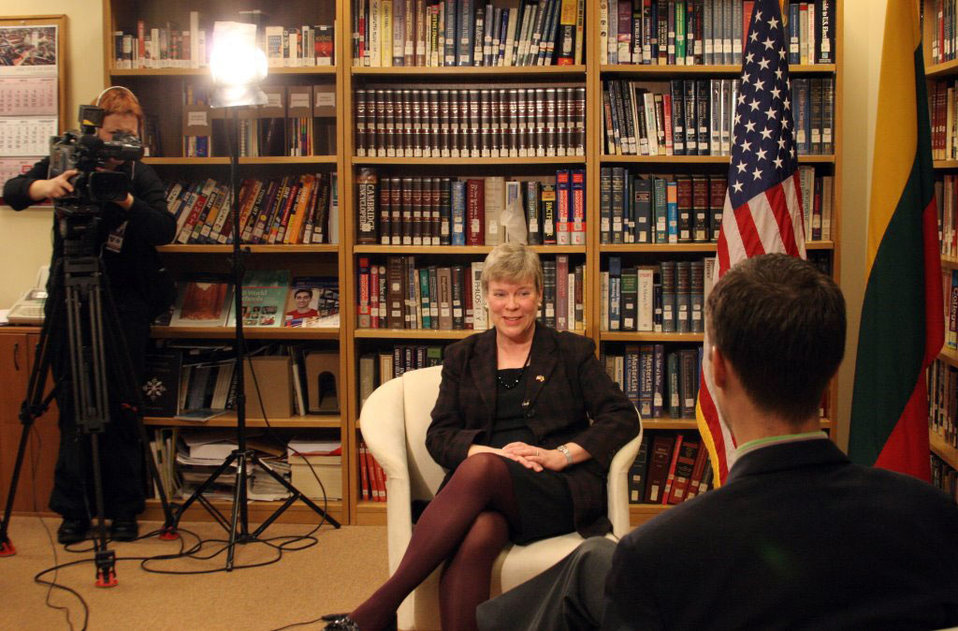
Acting Under Secretary Gottemoeller Is Interviewed By Baltic News Service' Benusius

Rose Gottemoeller, Acting Under Secretary of State for Arms Control and International Security, is interviewed by Vaidotas Benusius, senior reporter and foreign news editor at Baltic News Service, in Vilnius, Lithuania, on March 1, 2012.